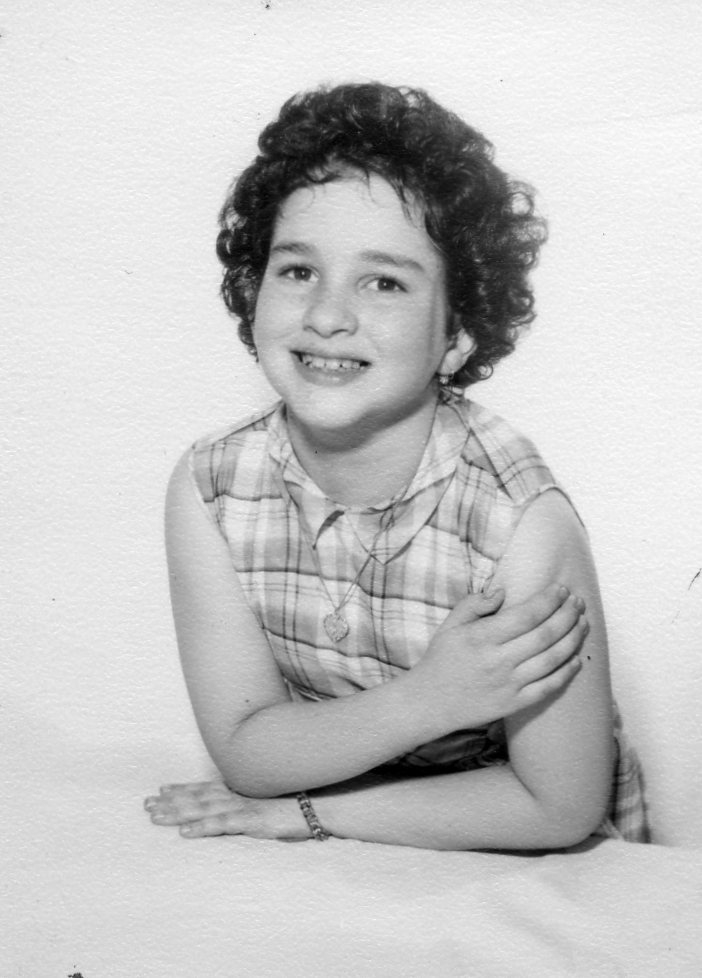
Youth 8

Judge Sonia Sotomayor at the age of six or seven years old.